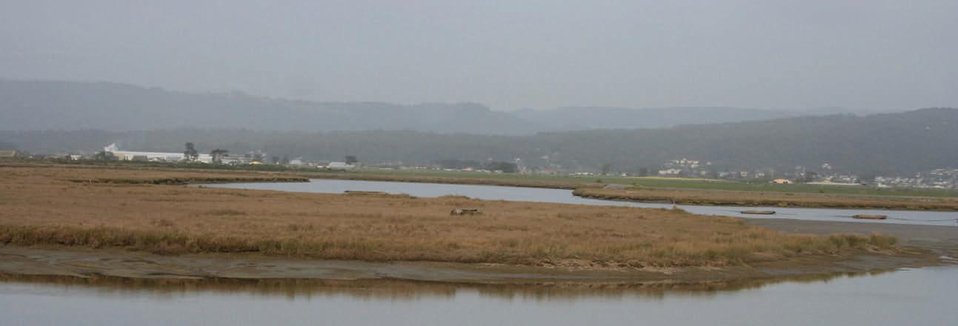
North Humboldt Bay